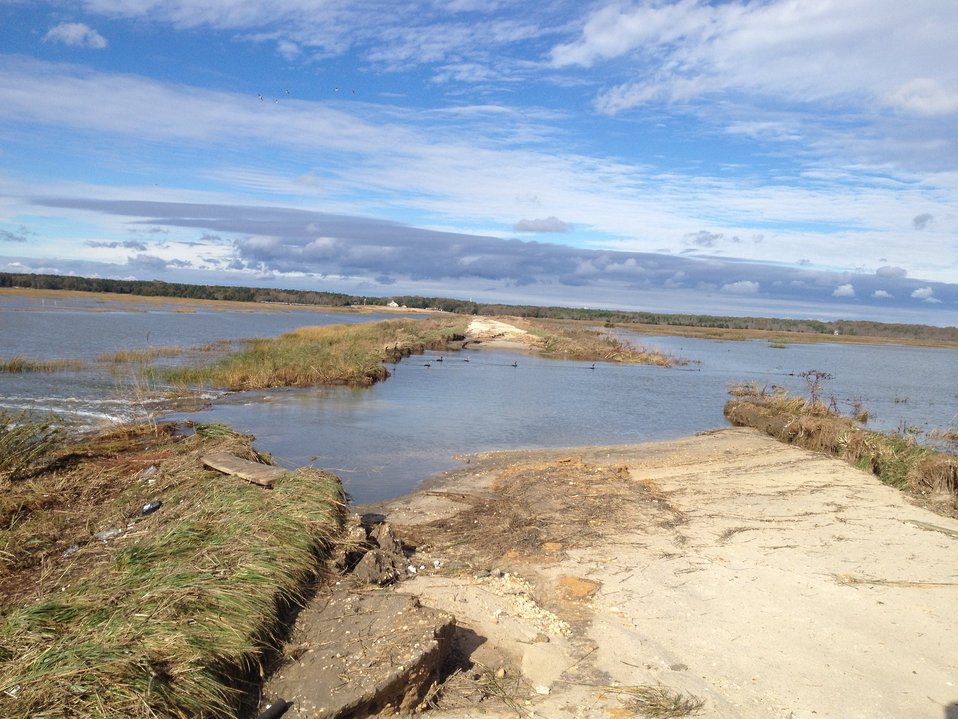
Hurricane damage at Edwin B. Forsythe Refuge (NJ)

Wildlife Drive at Edwin B. Forysthe National Wildlife Refuge was breached after Hurricane Sandy.